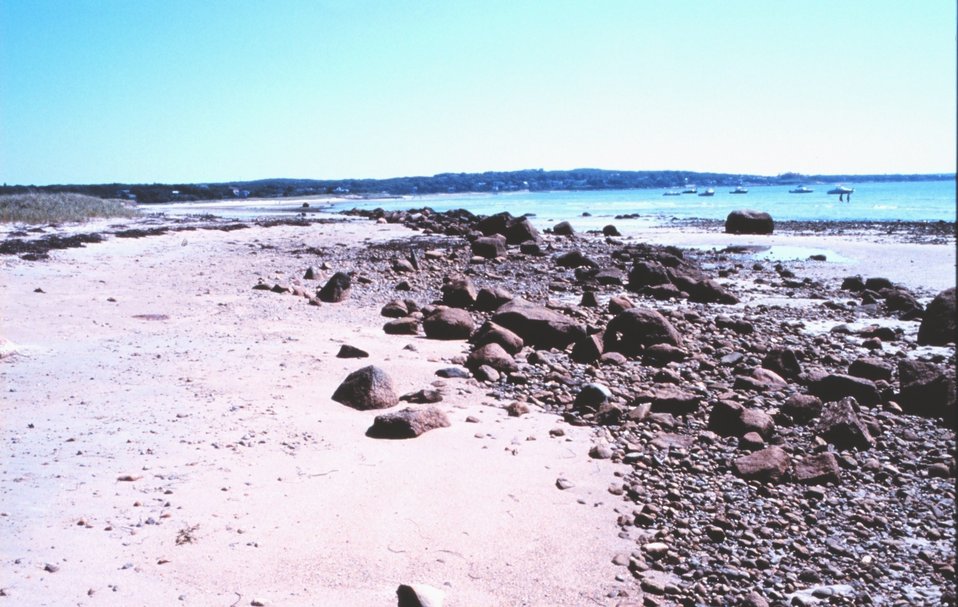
Black Beach, West Falmouth